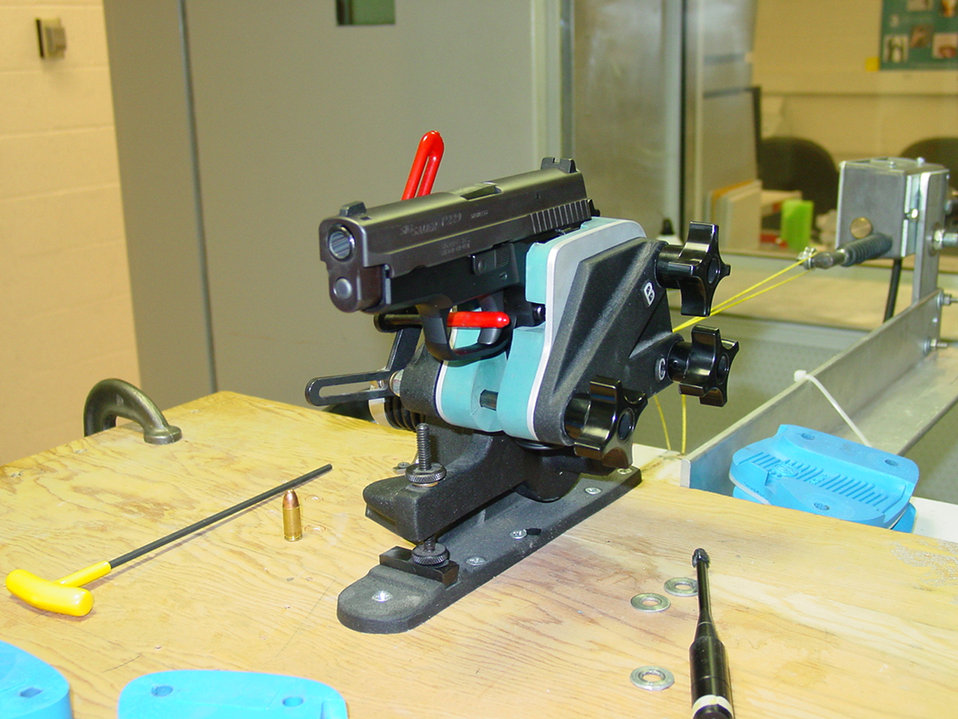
Technology Lacking for National Casing Database

A 9 mm gun held in a fixture for remote test firing at a NIST firing range. Casings are studied for identifying markings.